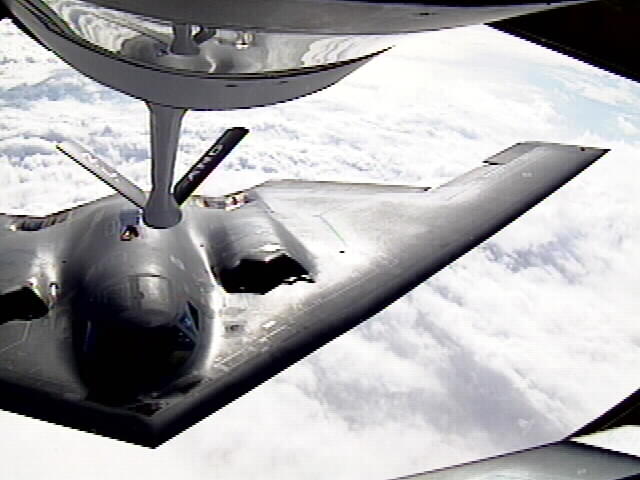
Atlantic refueling

OVER THE ATLANTIC OCEAN --A B-2 Spirit bomber glides into place for aerial refueling over the Atlantic during an April mission in support of Operation Allied Force. The aircraft belongs to Whiteman Air Force Base, Mo., and is working with the Air Force Reserves and the Air National Guard, supporting missions between McGuire Air Force Base, N.J., and the Balkans.